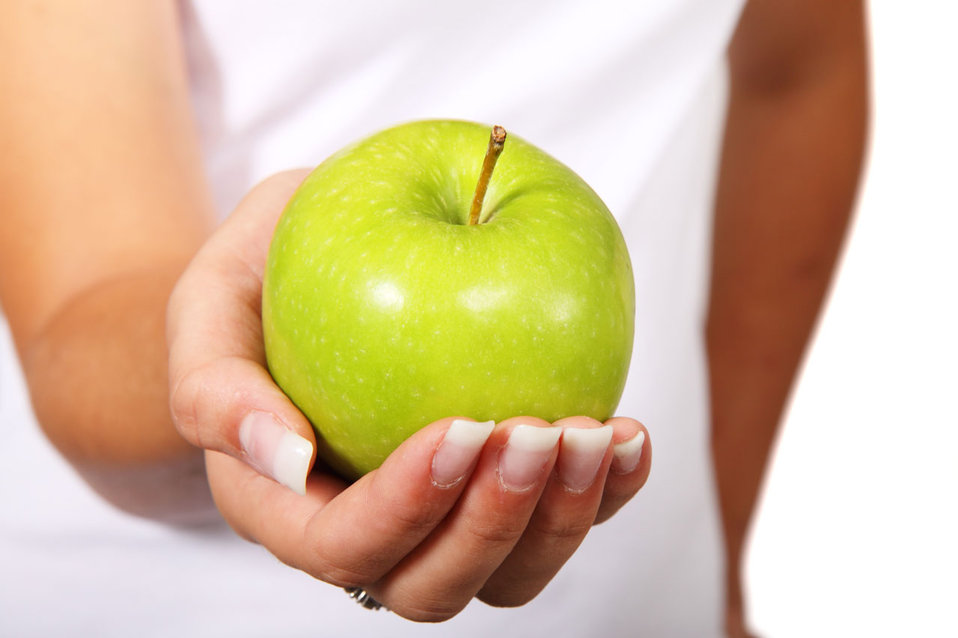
Green apple in hand

Fresh green apple in hand.